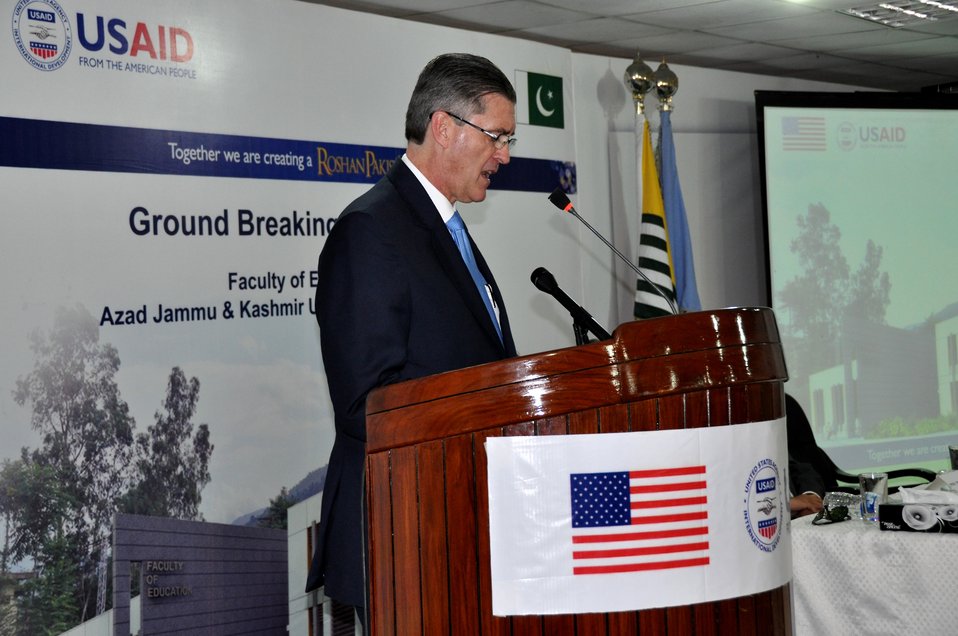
The United States Ambassador to Pakistan, Richard Olson broke ground for a U.S. funded construction of a new Faculty of Education building in Muzaffarabad, AJK. 11